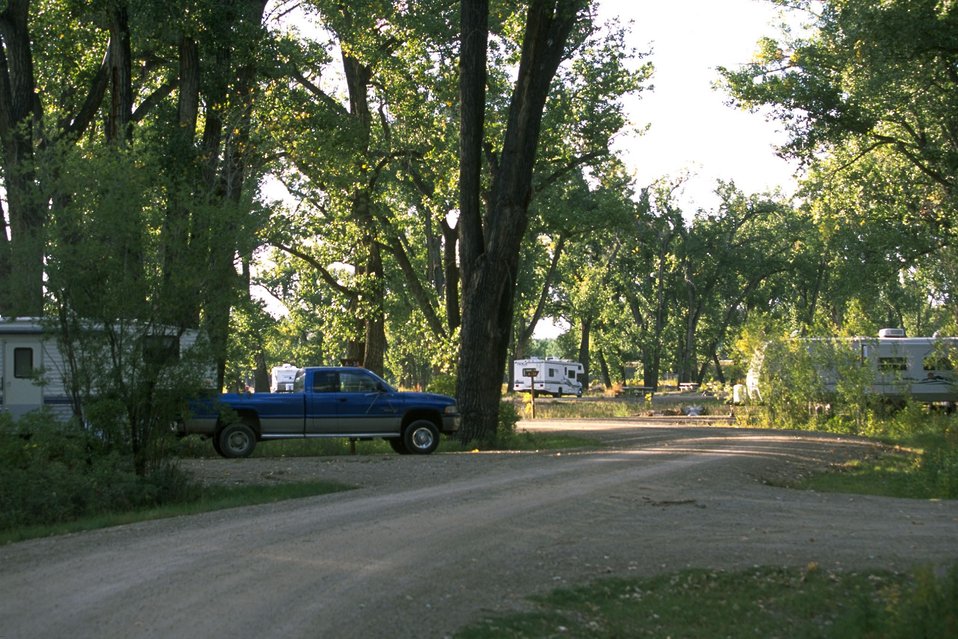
Kipp recreation area